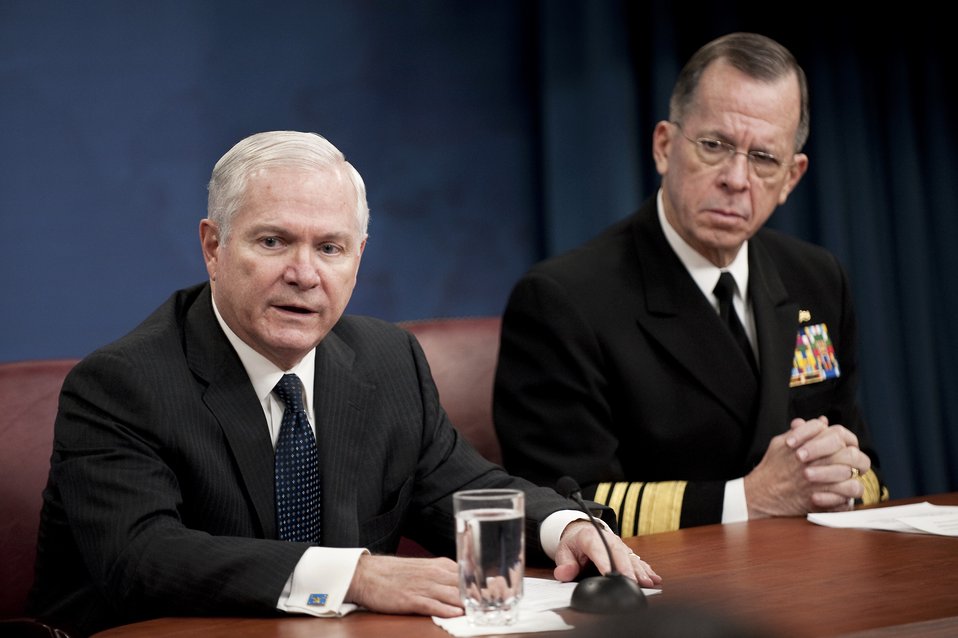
Haiti relief

Defense Secretary Robert M. Gates and Navy Adm. Mike Mullen, chairman of the Joint Chiefs of Staff, address the media at the Pentagon, Jan. 15, 2010. Secretary Gates and Admiral Mullen were discussing the Haiti earthquake relief efforts.